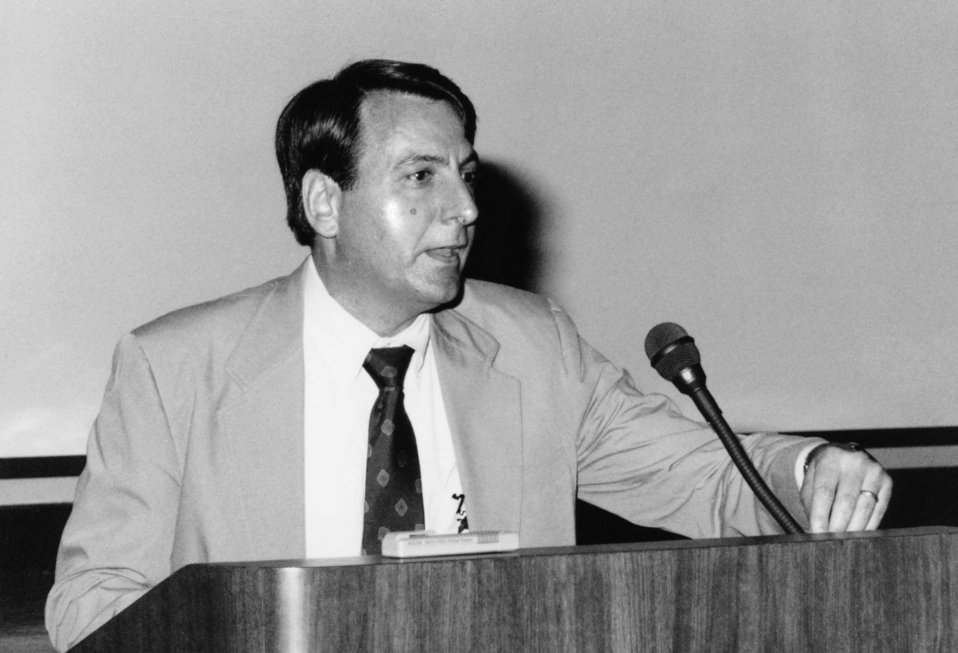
This 1993 photograph showed Dr. Mitchell Gail of the National Cancer Institute (NCI) as he addressed Centers for Disease Control staff during that year's Statistical Achievement Awards ceremony.